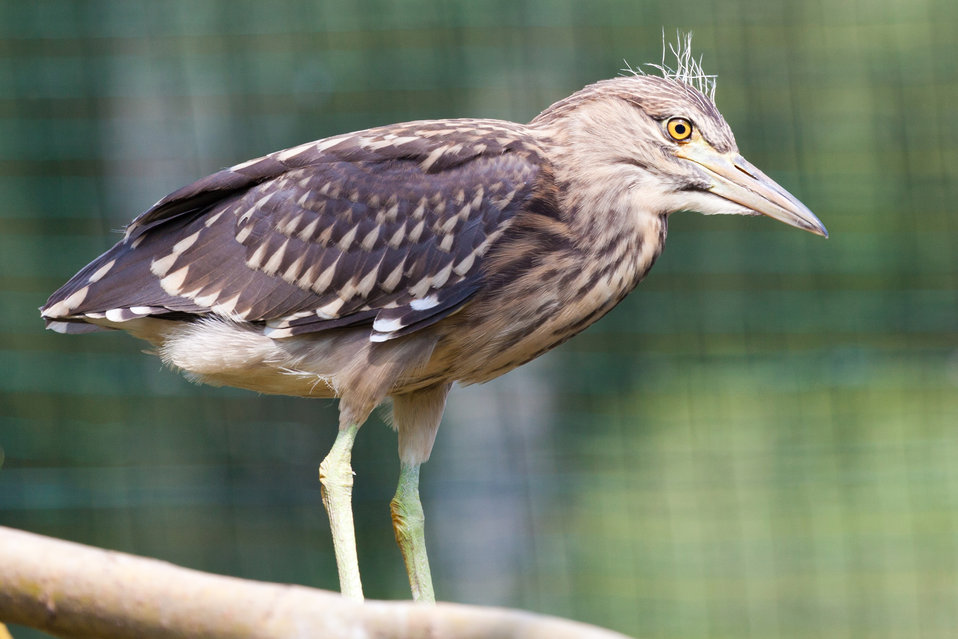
Nycticorax bird.